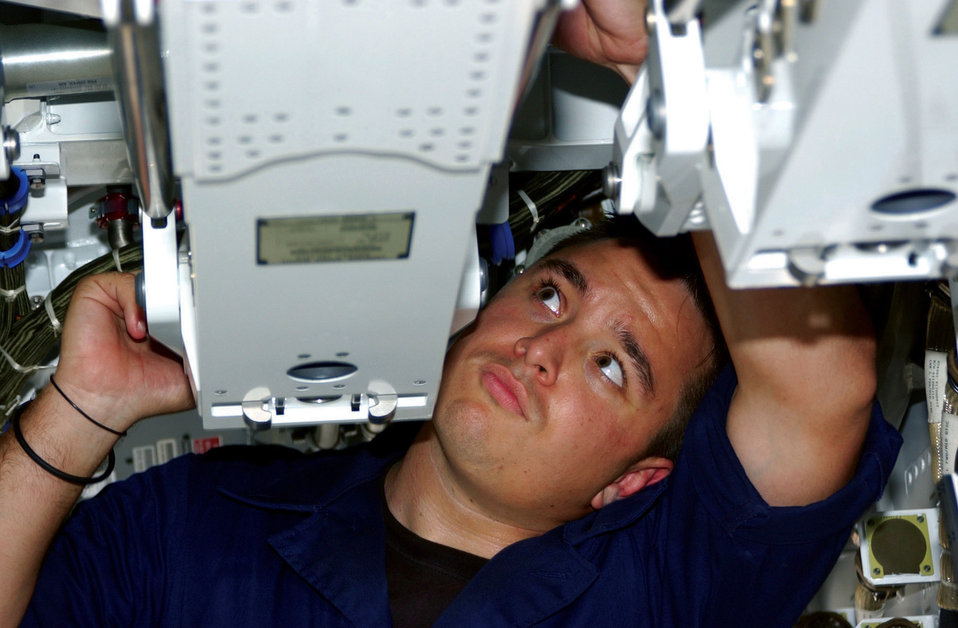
Weapons bay

TYNDALL AIR FORCE BASE, Fla. (AFPN) -- Senior Airman Michael Young, inspects an AIM-120 launcher in the main weapons bay of the F/A-22 Raptor here. Airman Young is assigned to the 43rd Aircraft Maintenance Unit.